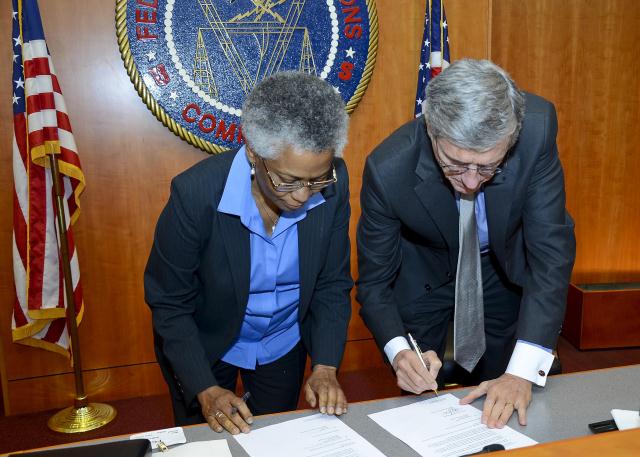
FCC and National Institute on Aging Signing Agreement to help Americans w/ hearing disabilities

Chairman Wheeler & the National Institute on Aging (NIA) Deputy Director Dr. Bernard signed an agreement today to partner on research into the use of modern IP technology to improve & make more accessible phone service to Americans with hearing disabilities.